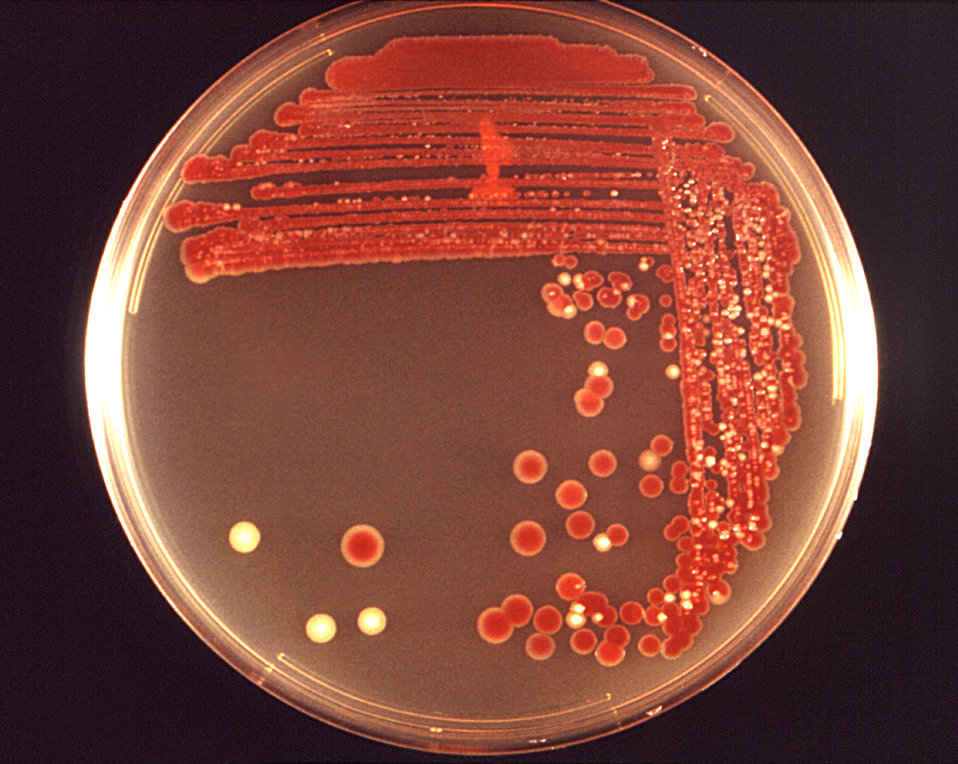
This inoculated blood agar base plate cultivated colonial growth of Gram-negative, rod-shaped and facultatively anaerobic Serratia marcescens bacteria.